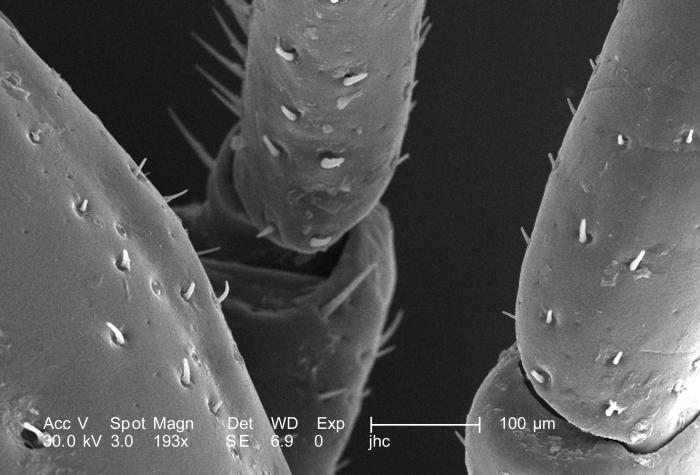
Under a relatively low magnification of 193X, this scanning electron micrograph (SEM) provided a closer view of this male Dermacentor sp. tick found upon a cat in the suburbs of Decatur, Georgia, which measured approximately 3.5mm from its gnathosoma (i.e., capitulum), which is where its mouthparts are located, to the distal abdominal margin (PHIL 9961). PHIL 9959 revealed all this tick's legs, placing it into the Phylum Arthropoda, i.e., from jointed ( 'Arthro'), and legs ('poda'), as well as the Class Arachnida, for they've eight of these legs, unlike insects, which use six appendages to move about. From proximal to distal location, each leg is comprised of a coxa, trochanter 1, trochanter 2, a femur, patella, tibia, a two-sectioned tarsus, and a two-part pretarsus, i.e., a pulvillus and claw. Here we see the trochantofemoral joint of the arachnid's left 3rd leg, and the femoropatellar joint of its left 2nd leg.